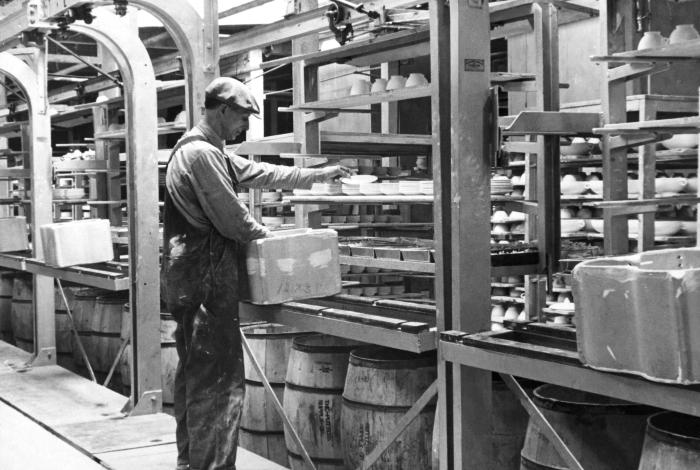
This historical image, which was provided by the Center for Disease Control's (CDC), National Institute for Occupational Safety and Health (NIOSH), depicted a West Virginia ceramics industry worker as he was filling a 'sagger' with greenware ceramic dishes, in which they'd subsequently be fired to a bisque state. A sagger is a ceramic container used to hold pre-fired delicate clay forms. The filled sagger was placed on an 'iron horse' conveyor system, which moved everything from materiel, product, and even workers. Note that this man was not wearing a protective filtered breathing mask, though he was standing in an environment notoriously known to be contaminated with airborne particulates, which would lead to the chronic pulmonary disease known as pneumoconiosis, or silicosis, or more commonly known as 'grinders' disease', characterized by the formation of nodular fibrotic changes in the lungs. The image was published in the 'Public Health Bulletin', No. 244, 1939.